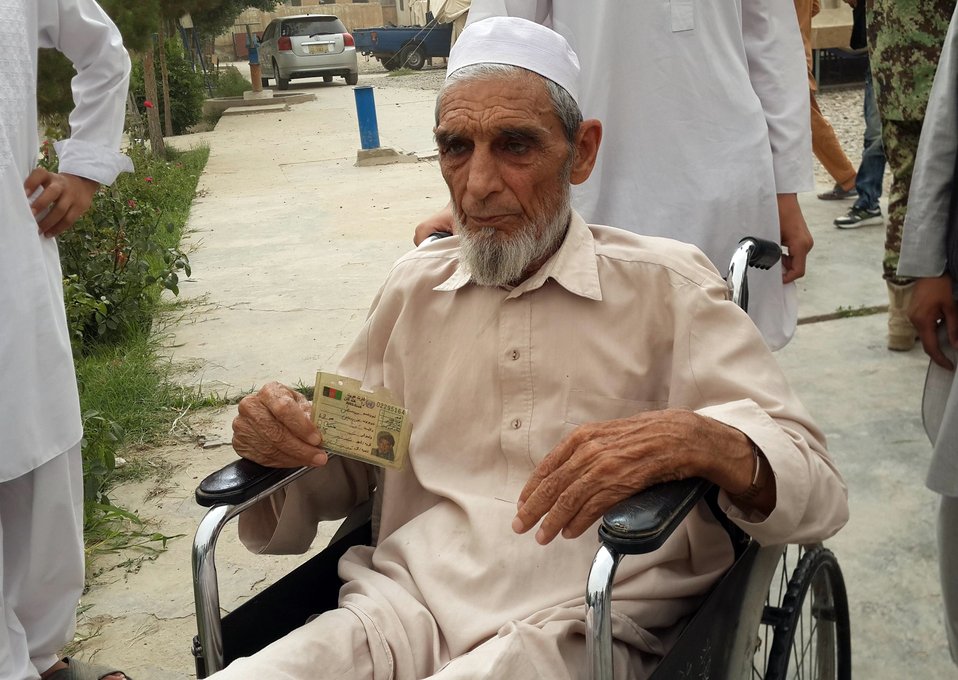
Afghan man sits in wheelchair and shows his voting card in Kunduz province.